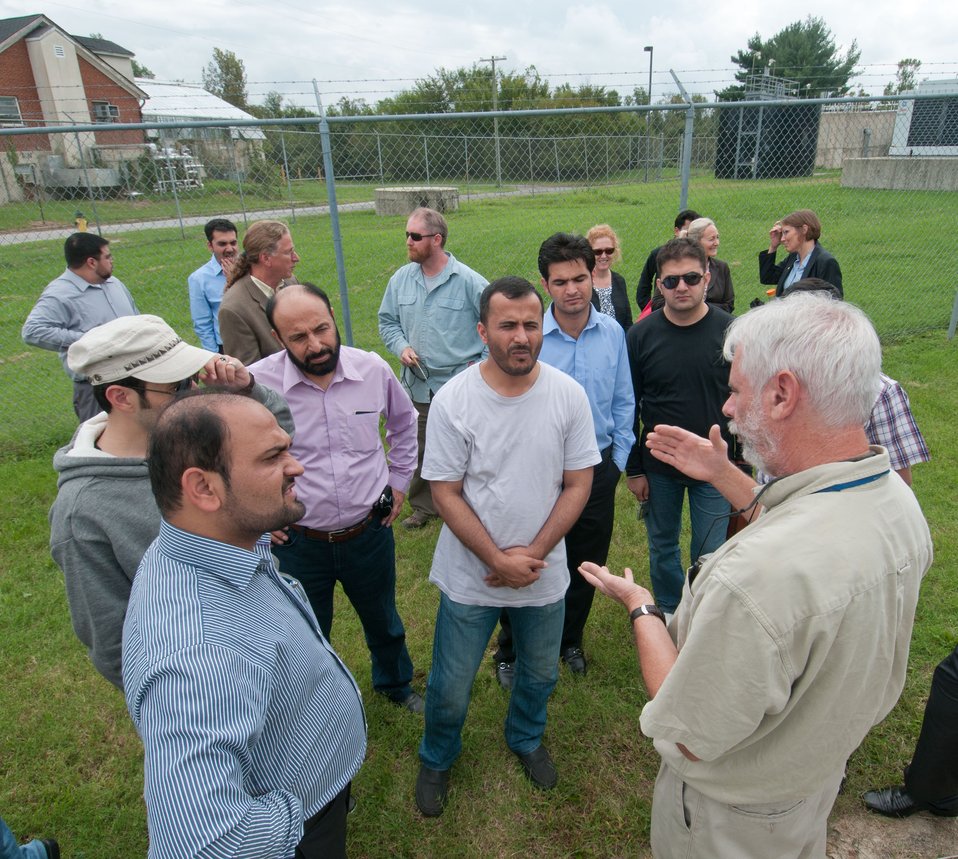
Afghan Borlaug1 Sept2011

Dennis Timlin (far right) of USDA’s Agricultural Research Service (ARS) spoke with the 12 Borlaug Fellows from Afghanistan’s Ministry of Agriculture, Irrigation and Livestock (MAIL) about the Global Climate Change Lab at the ARS facility in Beltsville, Md. on Wednesday.